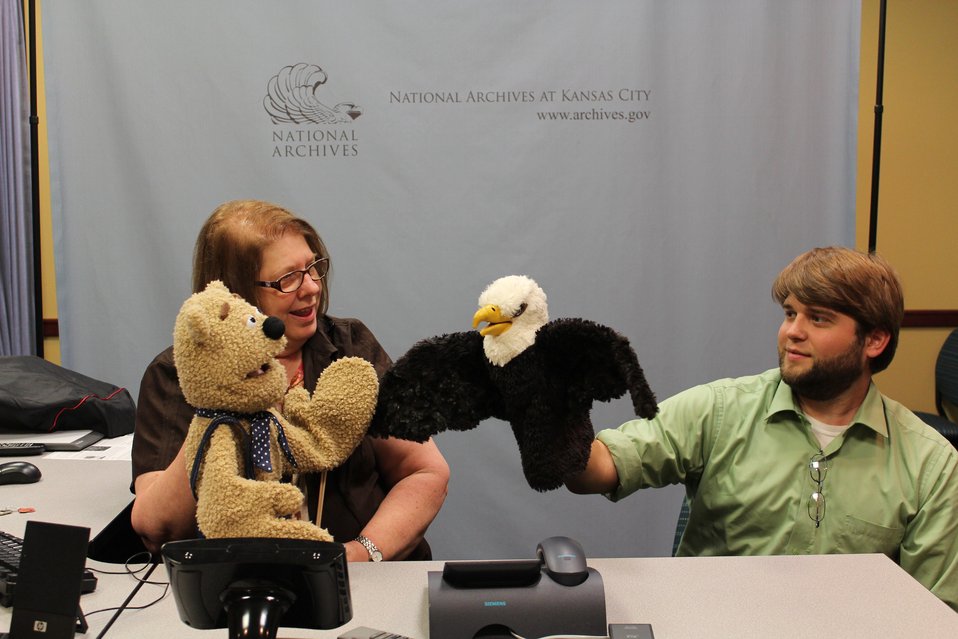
Ebert and Magee practice 'NARA and National Symbols,' a distance learning puppet show for kindergarteners; Mickey Ebert, Education Specialist; Chris Magee, Archivist; Hairy History, puppet; War Eagle, puppet; Location: National Archives at Kansas City - Interactive Distance Learning Lab, Kansas City, MO